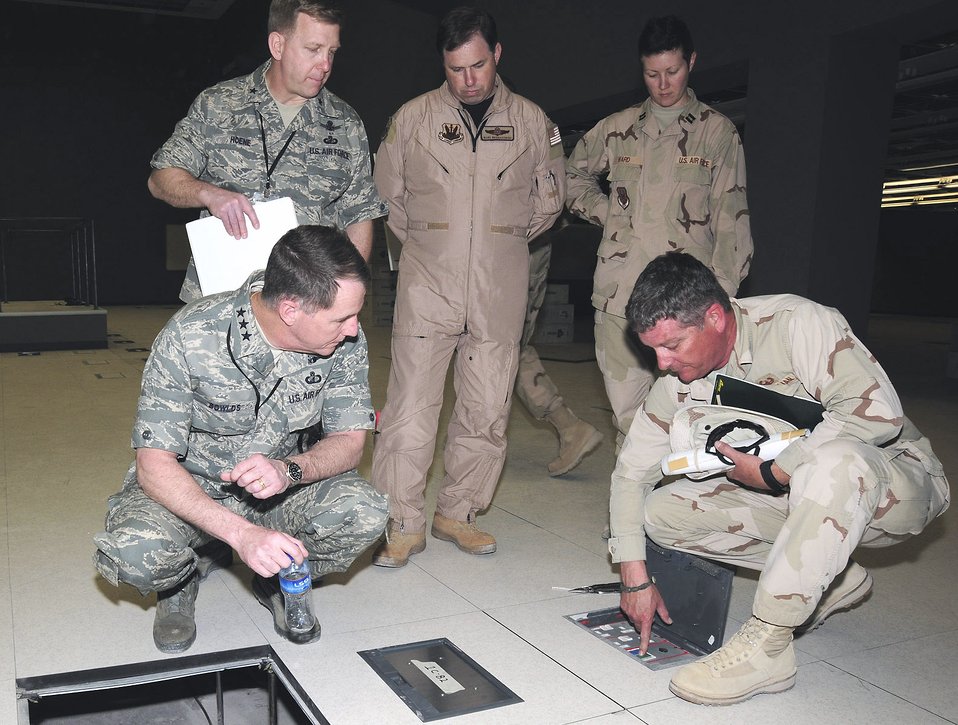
New operations center to open at Hanscom

Lt. Gen. Ted F. Bowlds (clockwise from left), Brig. Gen. Peter F. Hoene, Col. Mark Bronakowski, Capt. Amber Ward and Hal Steinman examine the floor boxes in the Combined Air and Space Operations Center's new facility during General Bowlds' March 4 visit to the forward Southwest Asia location. The floor boxes will be the main source of power for the CAOC's workstations and phone lines once the summer installation takes place in July. General Bowlds is the Electronic Systems Center commander, and General Hoene is the 350th Electronic Systems Wing commander, both at Hanscom Air Force Base, Mass. Colonel Bronakowski, Captain Ward and Mr. Steinman are members of the CAOC Program Management Office.